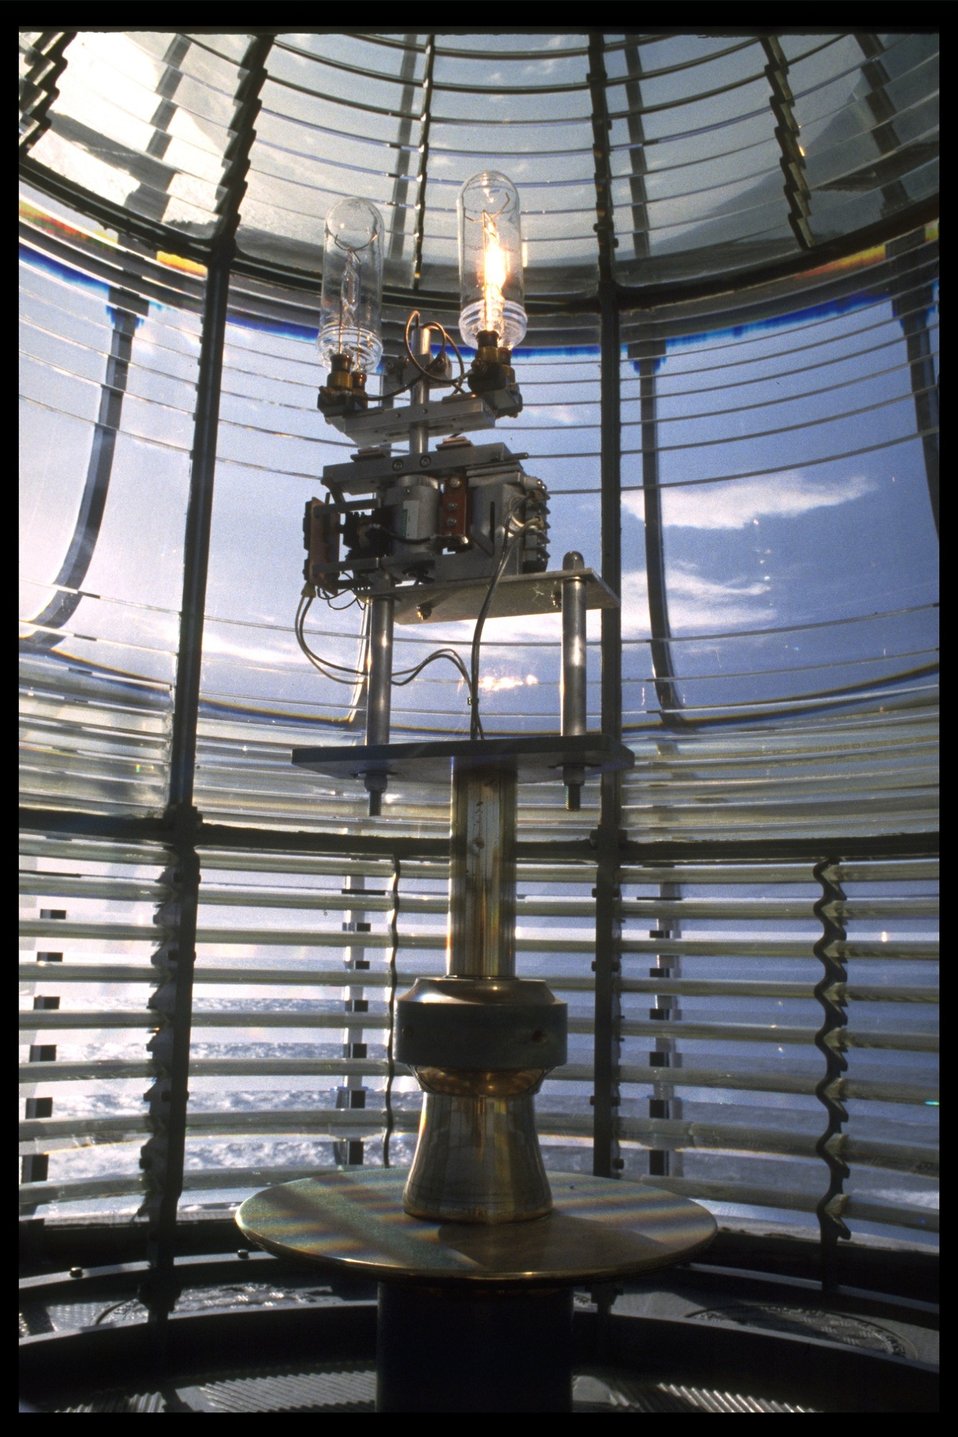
The lightbulb (1000 watt lens) on the interior of the Yaquina Head lighthouse.